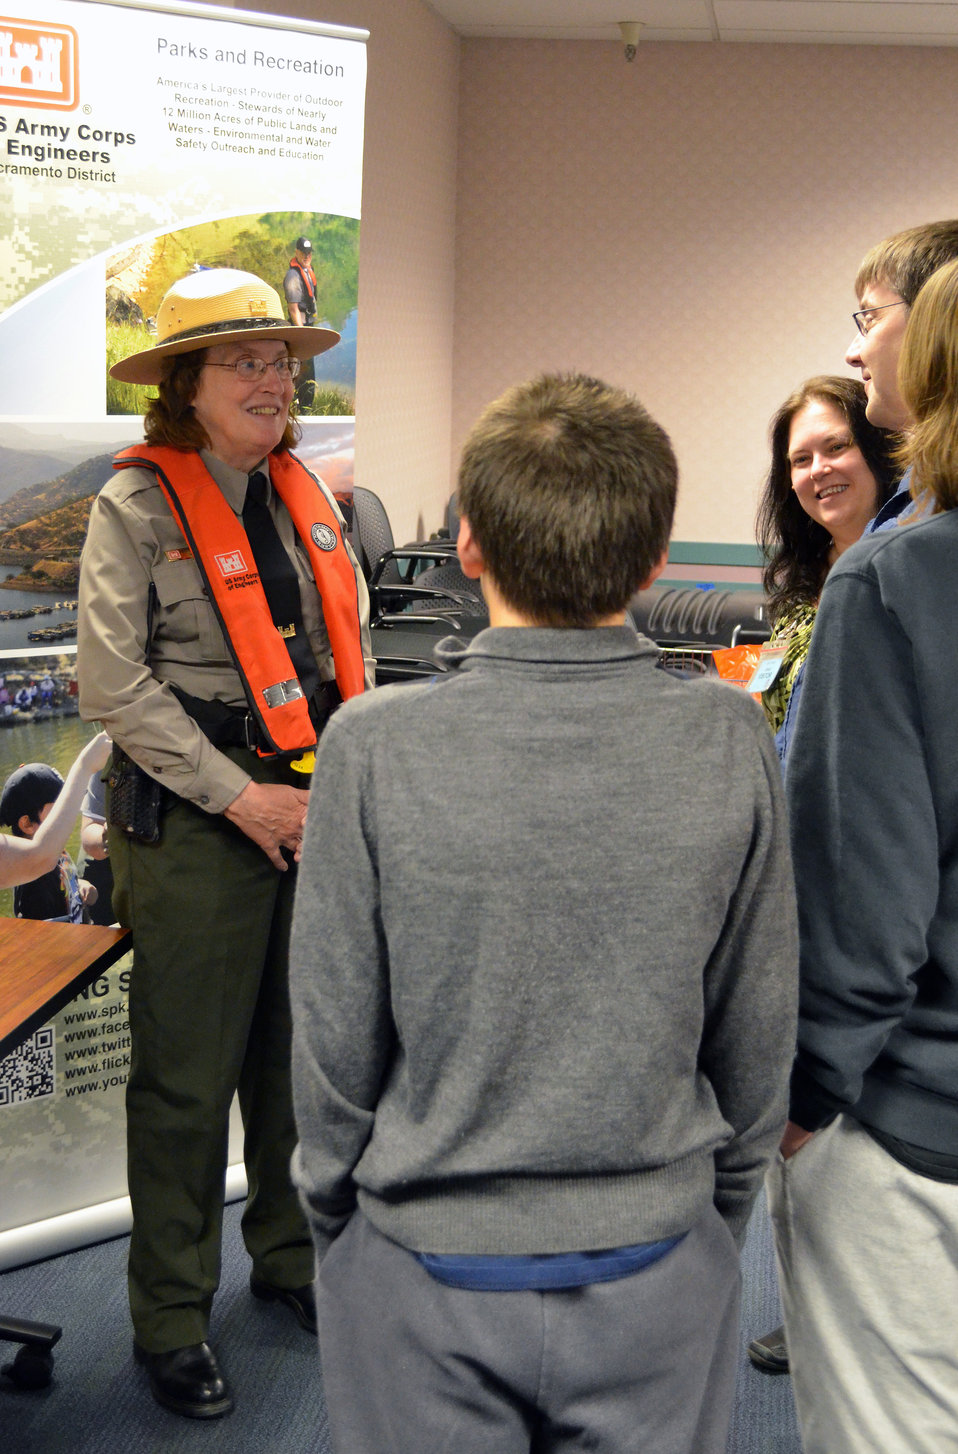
Bring Your Child to Work Day teaches kids about science, technology

Mary Ann Deeming, a park ranger with the U.S. Army Corps of Engineers Sacramento District, explains the Corps’ parks and recreation mission during the “Bring Your Child to Work Day” event April 24, 2014, at district headquarters in Sacramento, Calif. The district hosted the event to encourage kids to pursue careers in science, technology, engineering and mathematics, or STEM.